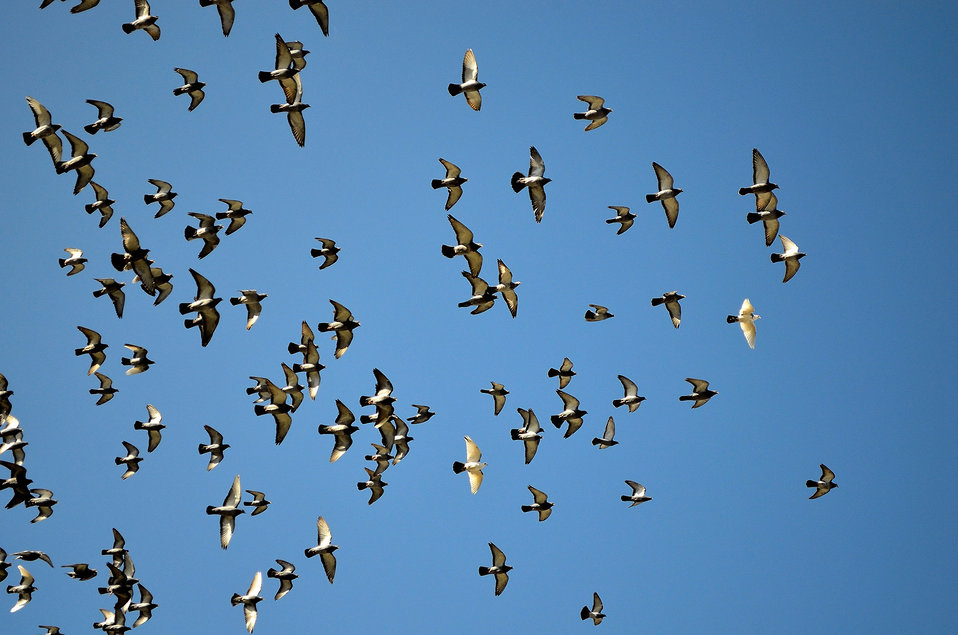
Flying pigeons.